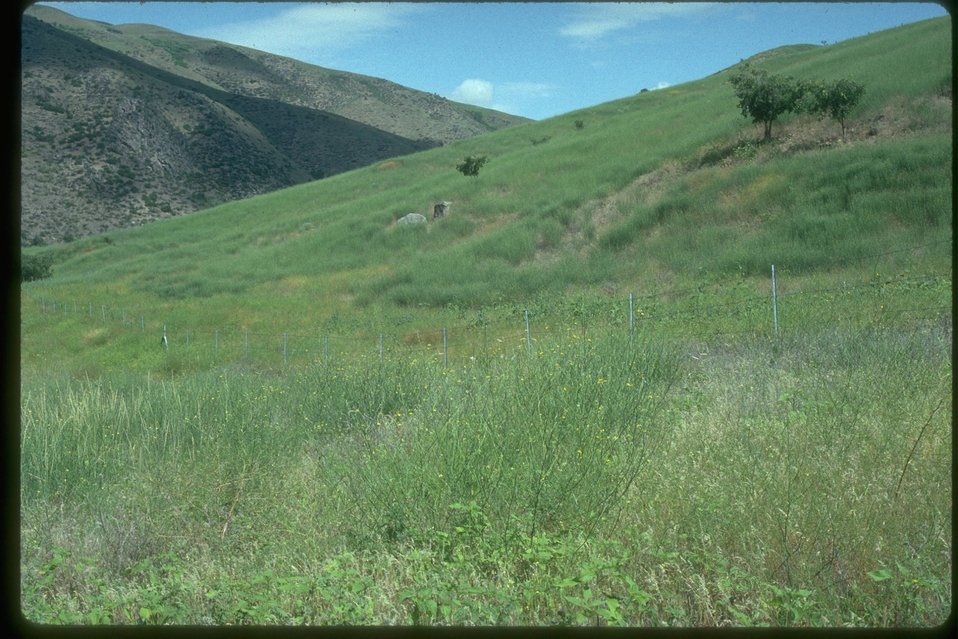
Expanse of rush Skeletonweed (green cast) near the Payette River. Outside of Boise, ID.